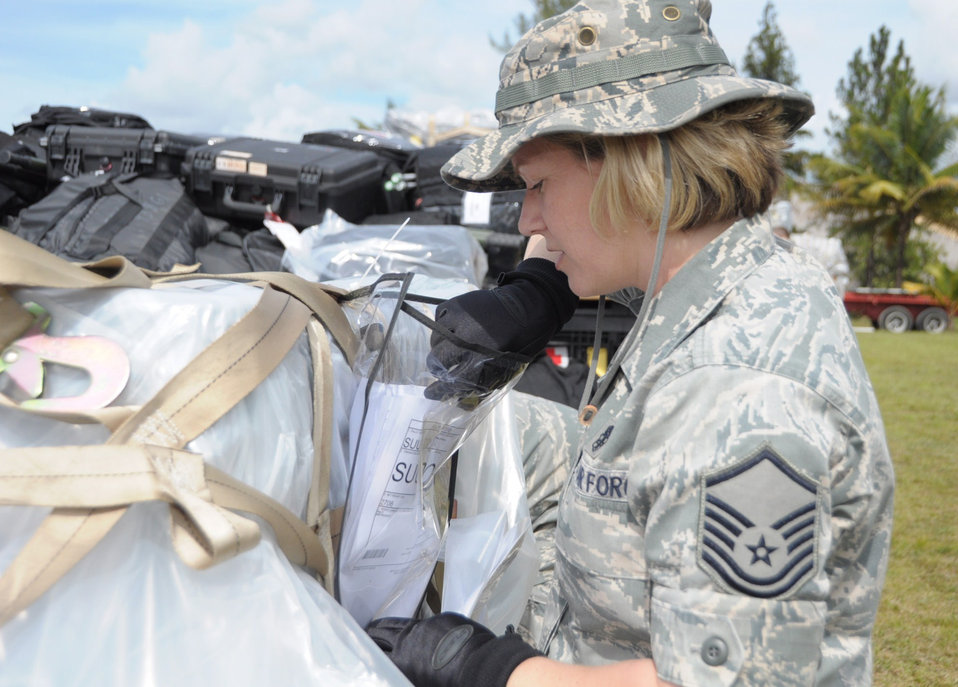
Airmen participate in humanitarian exercise in Trinidad and Tobago

Master Sgt. Tanya Hubbard begins to inspect the supply list on the pallets April 8, 2011, in Cumuto Barracks at Trinidad and Tobago. Sergeant Hubbard is a part of the Expeditionary Medical Support Health Response Team supporting the Allied Forces Humanitarian Exercise/Fuerzas Aliadas.